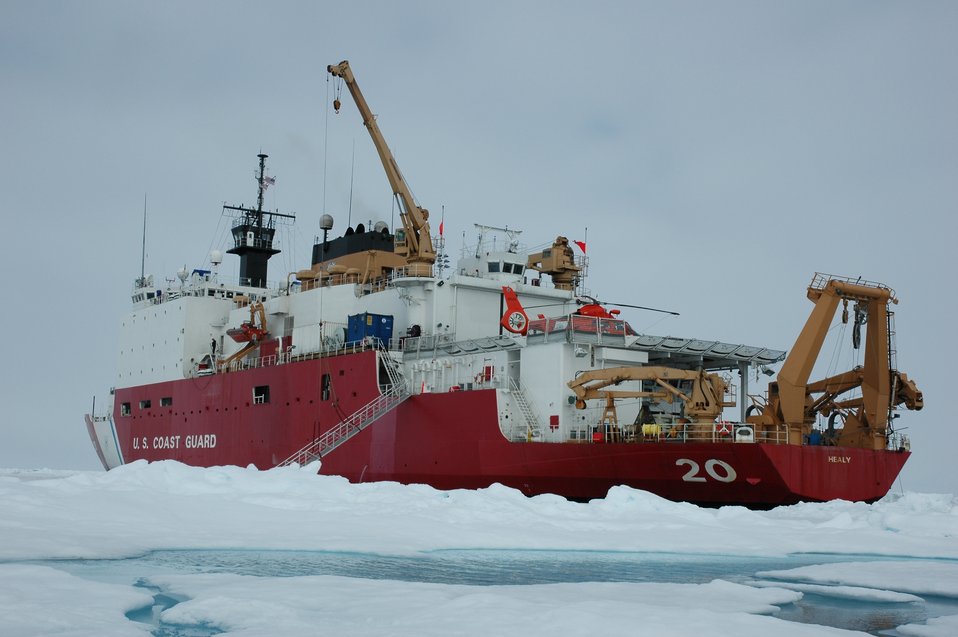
The US Coast Guard Icebreaker HEALY.